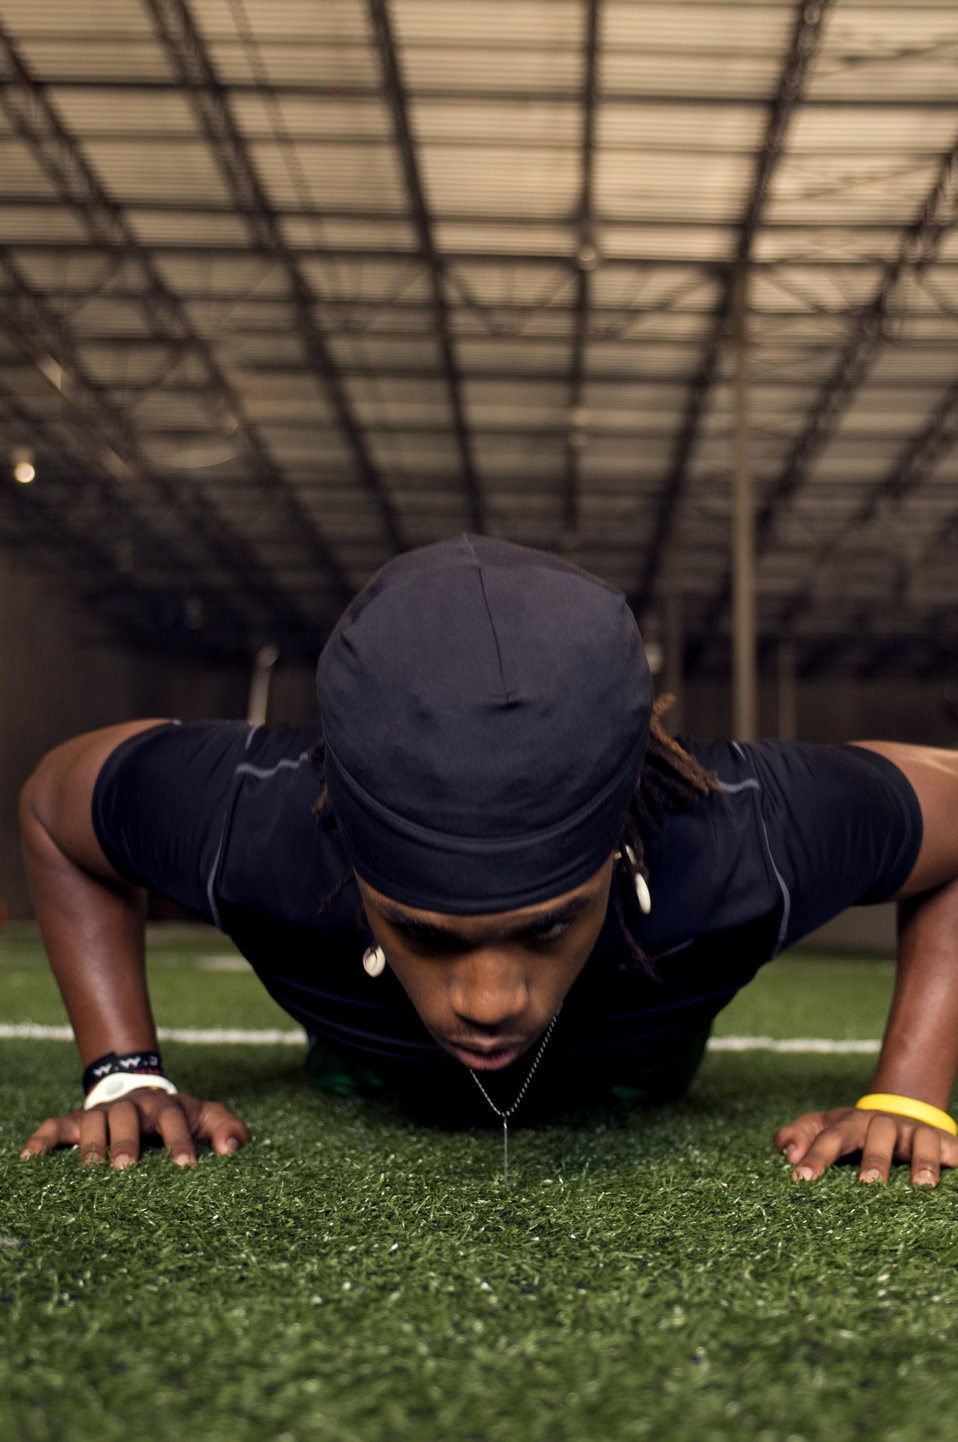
This young man was performing push-ups on an indoor practice field's artificial grass surface. At this point of his activity, he was at the low-point of his push-up exercise, and had assumed a modified plank position, whereupon, his arms were both flexed at the elbows, his palms were flush with the ground, and chest was touching, but not resting on the ground. Hopefully, he was keeping well hydrated during his exercise regimen by drinking fresh water during his workout.